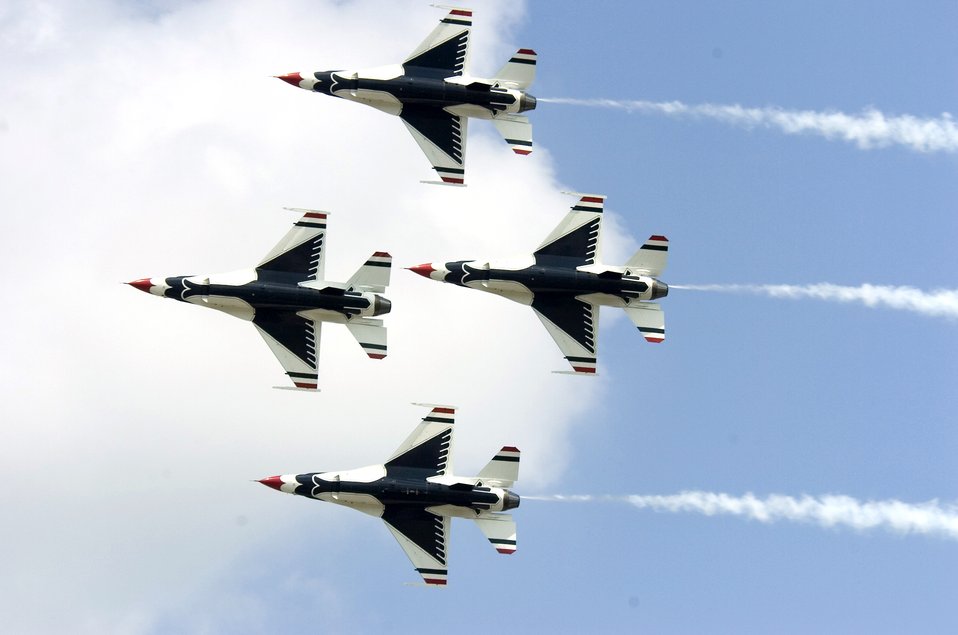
Air Force Week concludes in St. Louis

The Thunderbird diamond formation passes in review during a practice show at Scott Air Force Base, Ill., on Aug. 11.